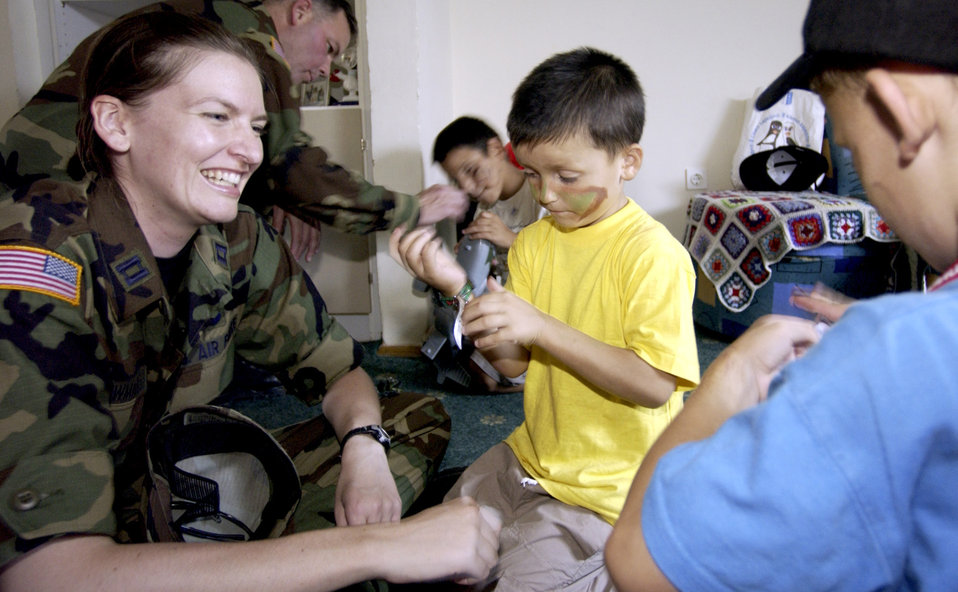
Sharing smiles in Sarajevo

SARAJEVO, Bosnia -- Capt. Farrah Newman plays with children at an orphanage here during a volunteer program called Operation Smile. After a day of sports, training and theatrical events Stabilization Force and NATO troops donated toys to all the orphans. Operation Smile is an SFOR program dedicated to providing morale support to orphaned children here. Captain Newman is a military personnel officer at nearby Camp Butmir.